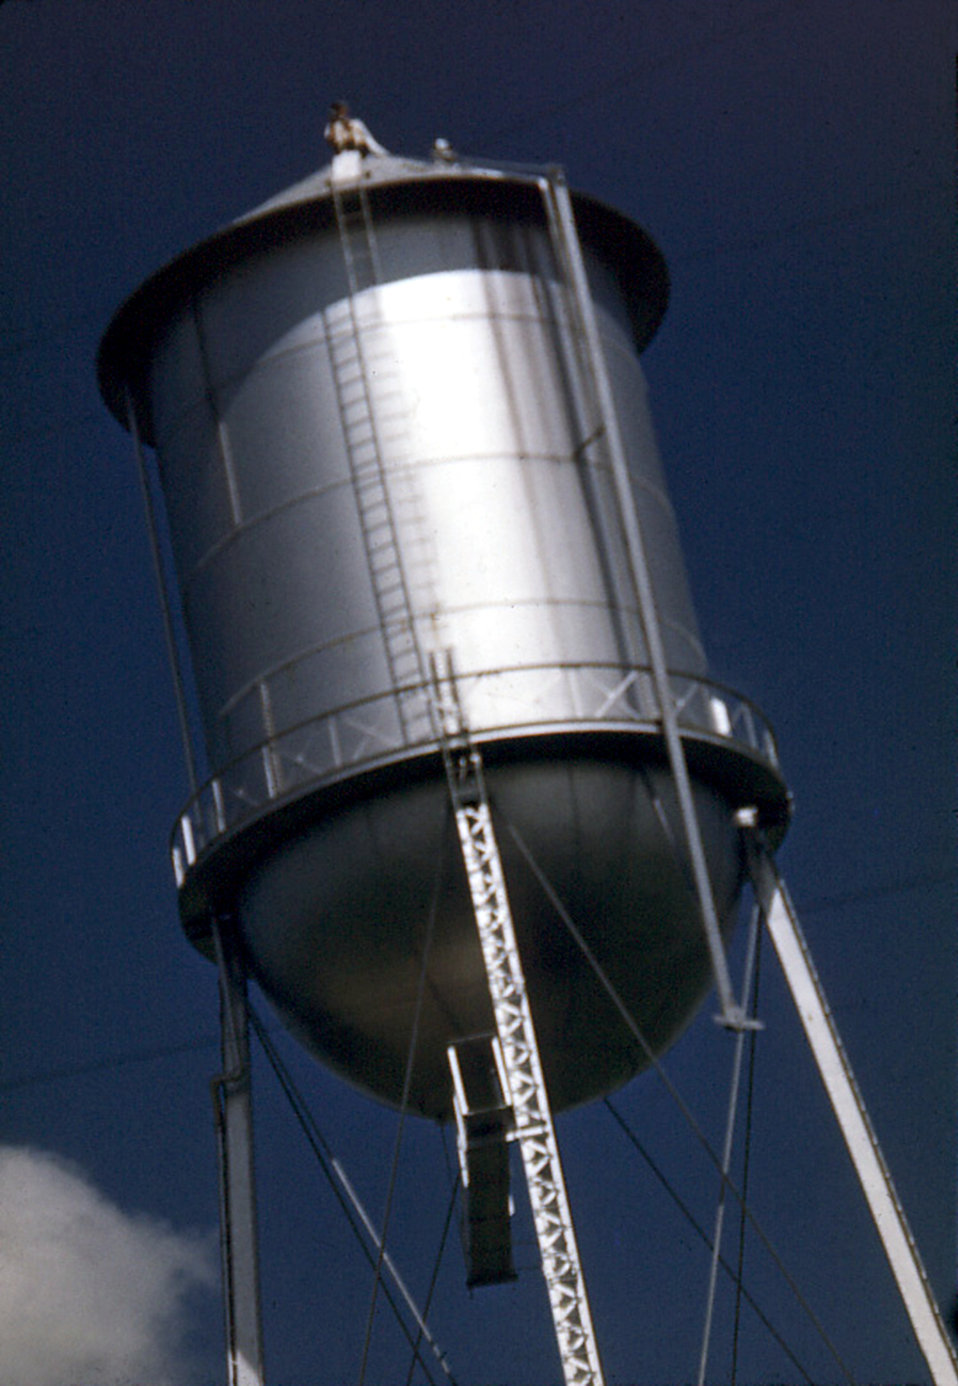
A water tower in Louisiana

This was the reservoir tank, or "water tower" that was filled with water after it had been treated by the Carville, Louisiana Leprosarium's filtering plant.